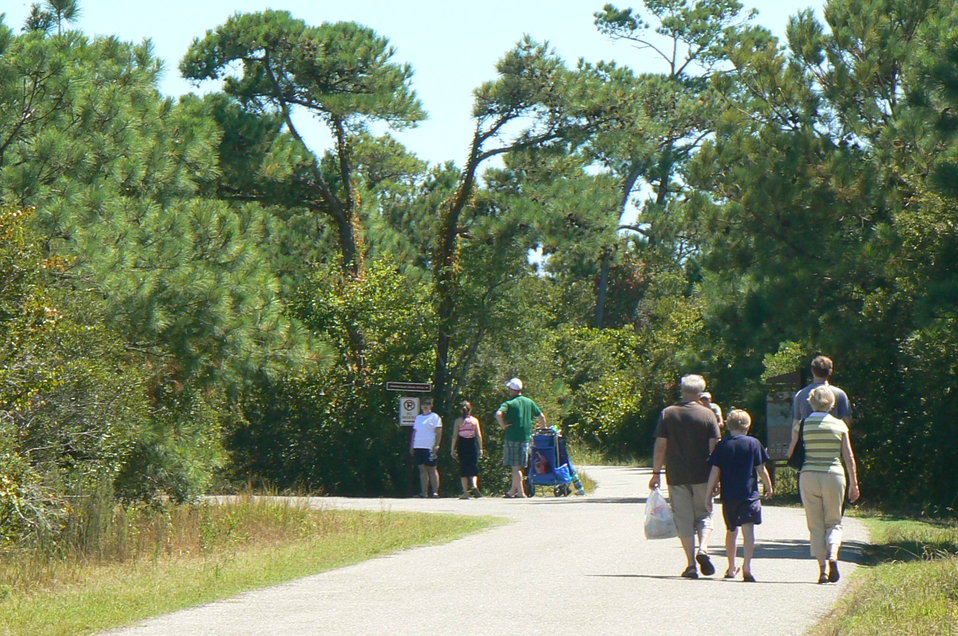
Walking to the Beach at Chincoteague

With Irene burying the parking lot, Some people walked 45 minutes to reach the beach. Michael Dixon/USFWS